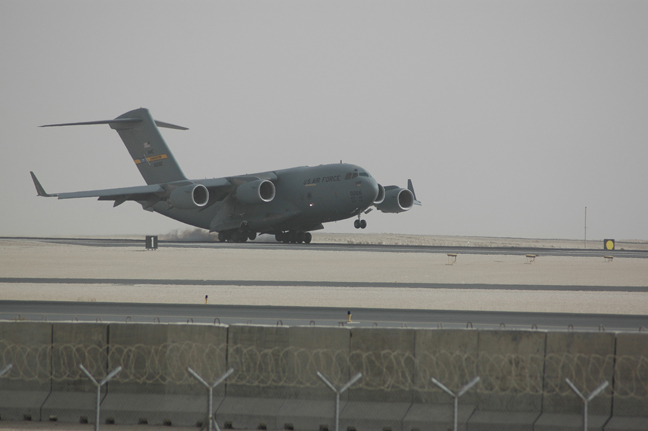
airpower summary

The C-17 Globemaster III is the newest, most flexible cargo aircraft to enter the airlift force. The C-17 is capable of rapid strategic delivery of troops and all types of cargo to main operating bases or directly to forward bases in the deployment area. The aircraft can perform tactical airlift and airdrop missions and can also transport litters and ambulatory patients during aeromedical evacuations when required. The inherent flexibility and performance of the C-17 force improve the ability of the total airlift system to fulfill the worldwide air mobility requirements of the United States.